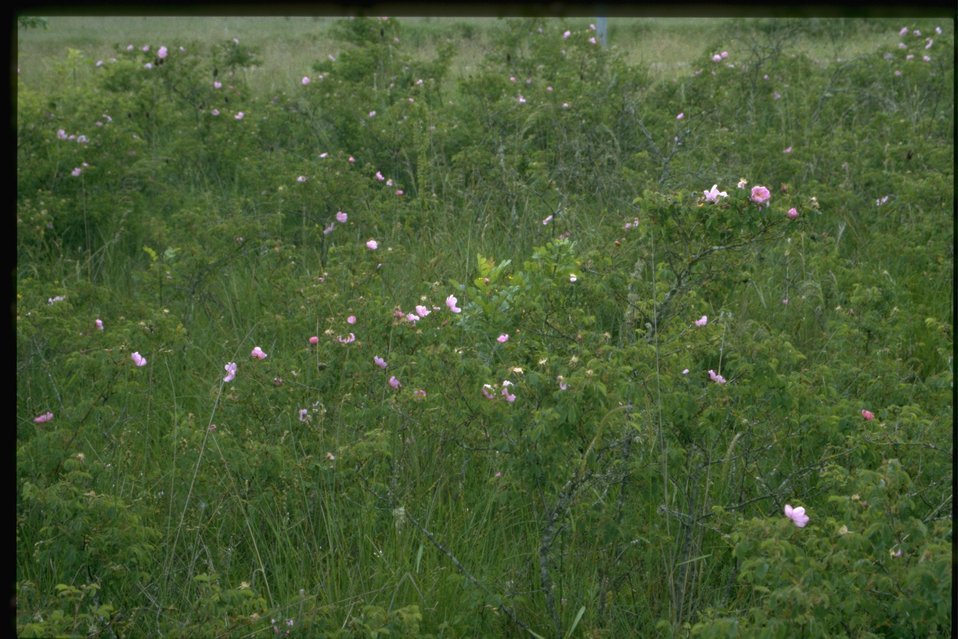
Farshot of Rosa habit.